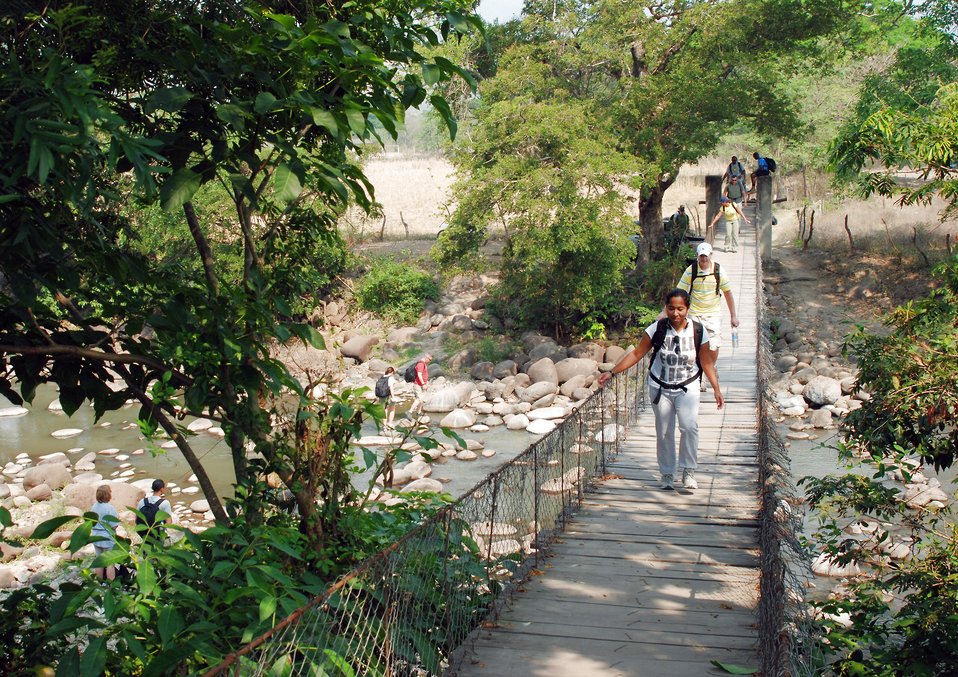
JTF-Bravo volunteers give needed food to local Hondurans

Joint Task Force-Bravo personnel cross a river April 26 on the way to deliver much-needed food to two villages near Humuya, Honduras. The staple foods, including rice, flour and oil, temporarily help Honduran families affected by rising food costs and poor crop production.